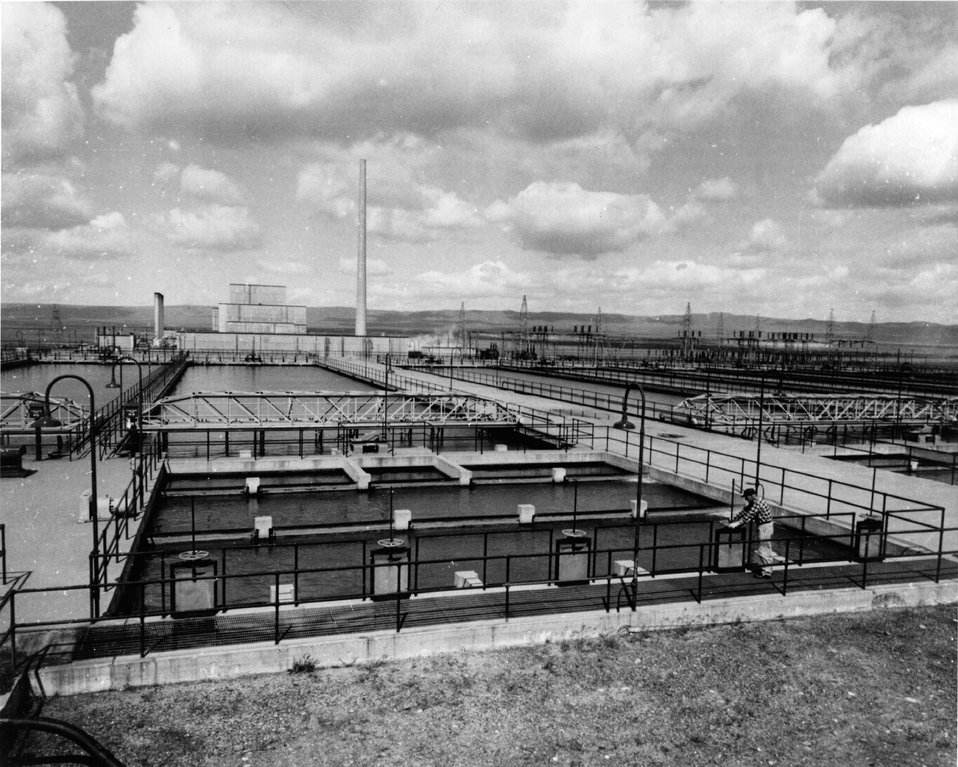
This photo of one of the eight plutonium production reactor facilities at the Atomic Energy Commission's Hanford plant reveals on of the huge water treatment facilities required to filter Columbia River water used as a reactor coolant. c.1964.